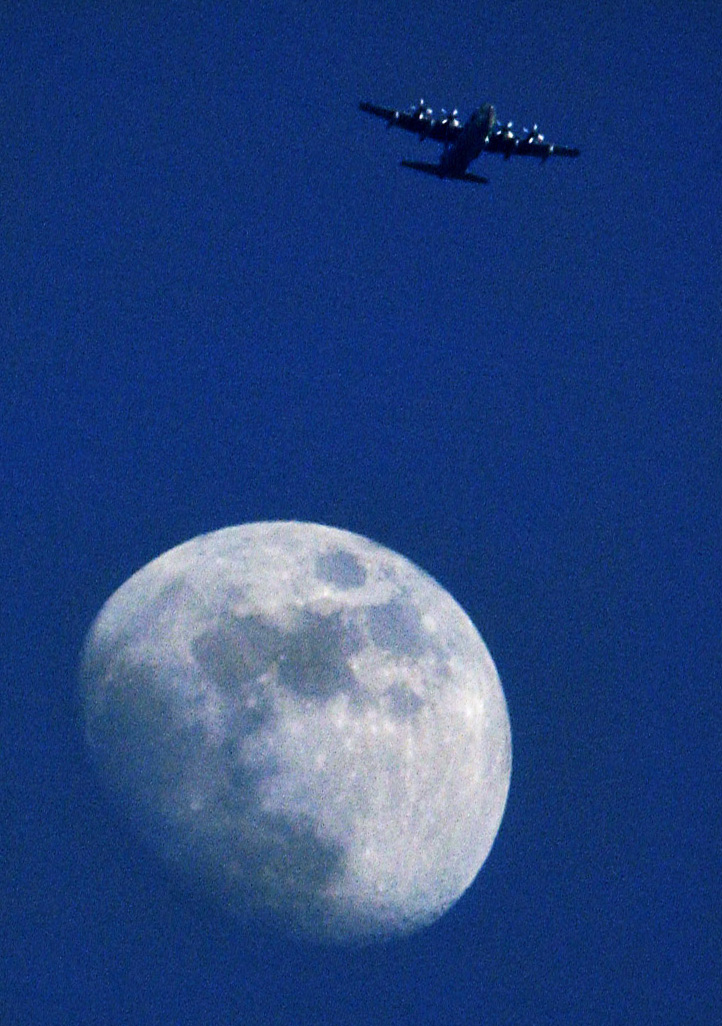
Over the moon

CAMP LEMONIER, Djibouti (AFPN) -- A C-130 Hercules of the 131st Rescue Squadron flies high over the Golf Drop Zone -- and seemingly over the moon -- near this camp in the Horn of Africa.